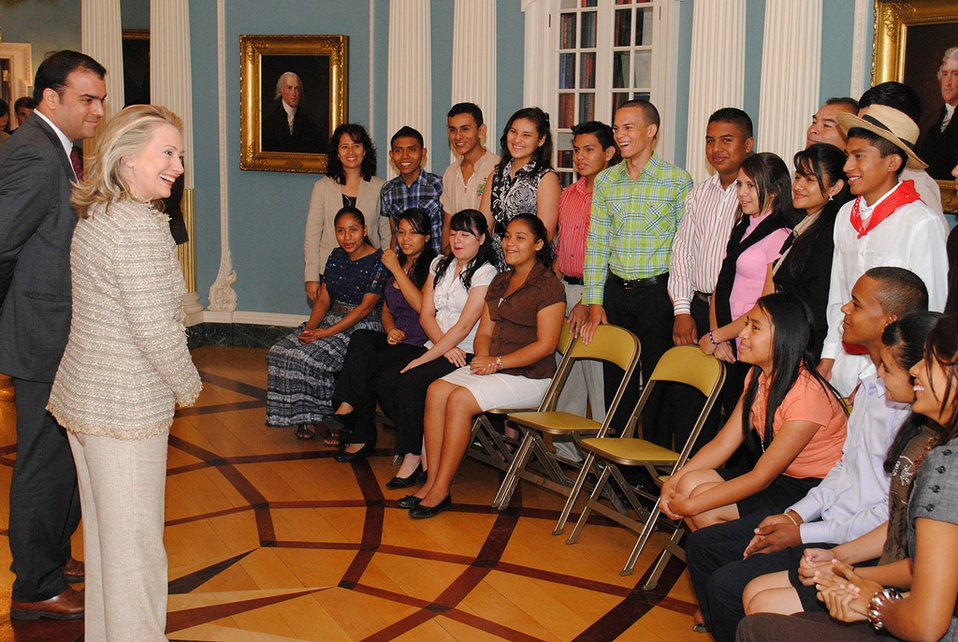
Secretary Clinton Meets With Youth Ambassadors

U.S. Secretary of State Hillary Rodham Clinton meets with Youth Ambassadors from Central America and the Dominican Republic at the U.S. Department of State in Washington, D.C., on June 8, 2012.